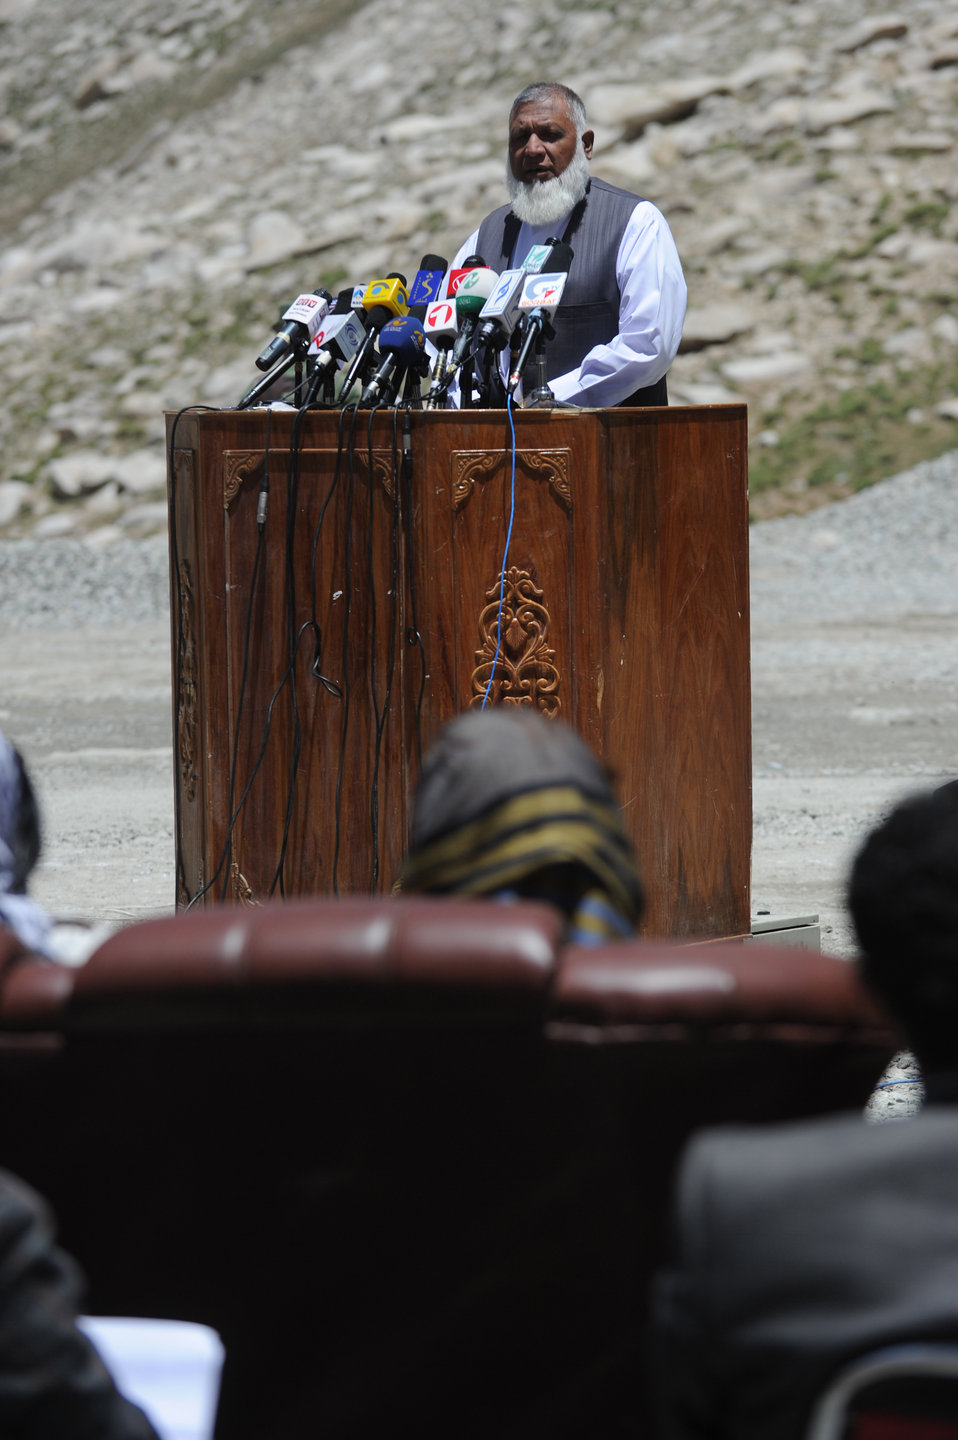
Baghlan Governor Mohammad Akbar Barakzai makes remarks during a ceremony to mark the beginning of renovations at the Salang Tunnel on the border of Parwan and Baghlan Provinces, Afghanistan, on Wednesday, June 15, 2011. (S.K.Vemmer/Department of State)